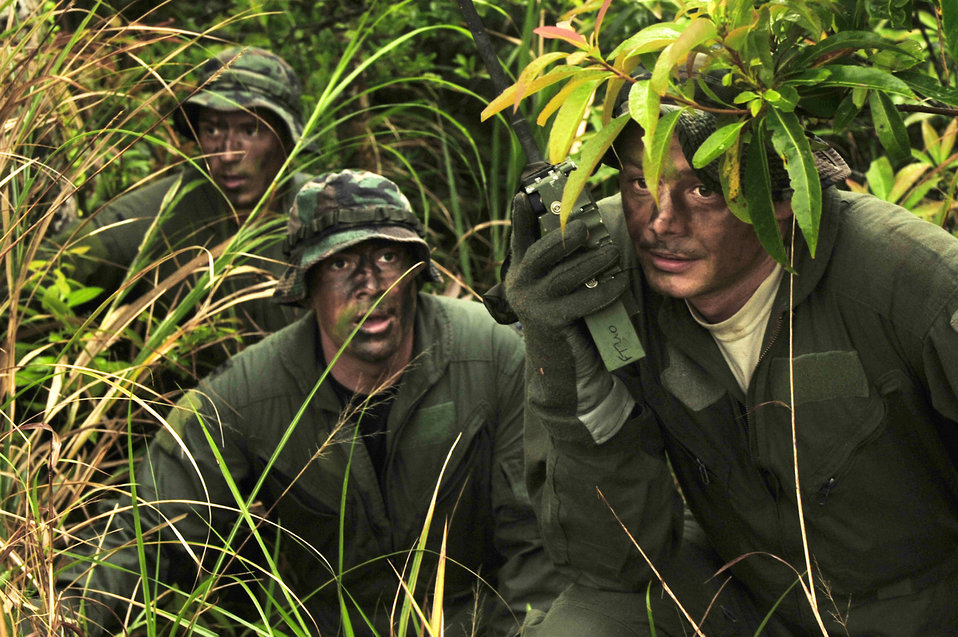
Survival and Evasion Training

First Lt. Joseph Bisson (left to right), Capt. Aaron Wallace and Tech. Sgt. Michael Ingram make contact with